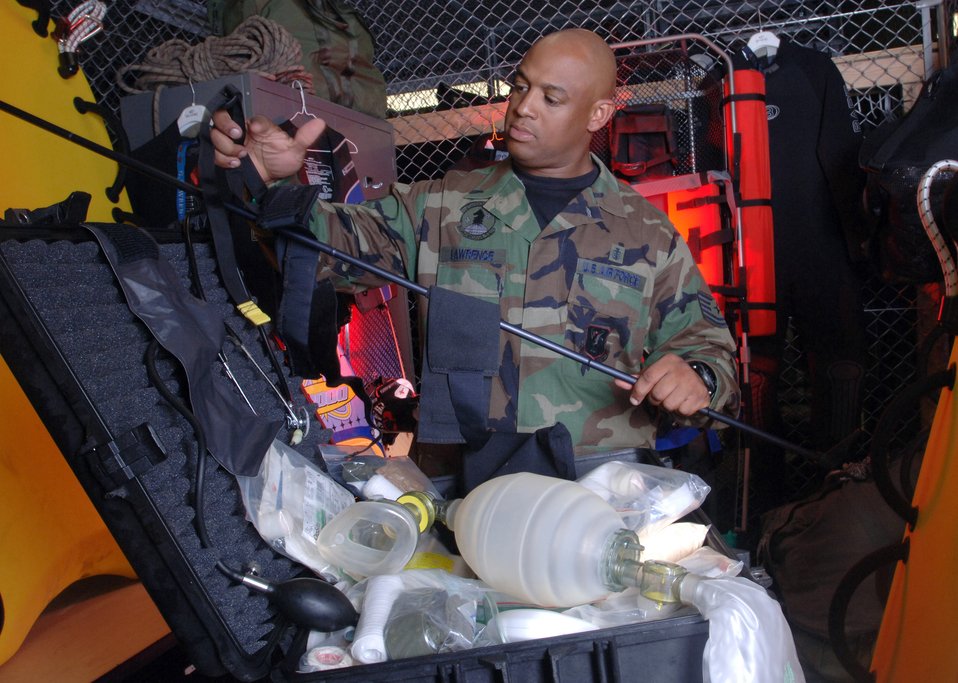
Medical inspection

KADENA AIR BASE, Japan -- Tech. Sgt. Gerry Lawrence inspects medical equipment used by pararescuemen during water operations. He provides medical support to 31st Rescue Squadron Airmen during water and ground training here. He is assigned to the squadron's medical element.